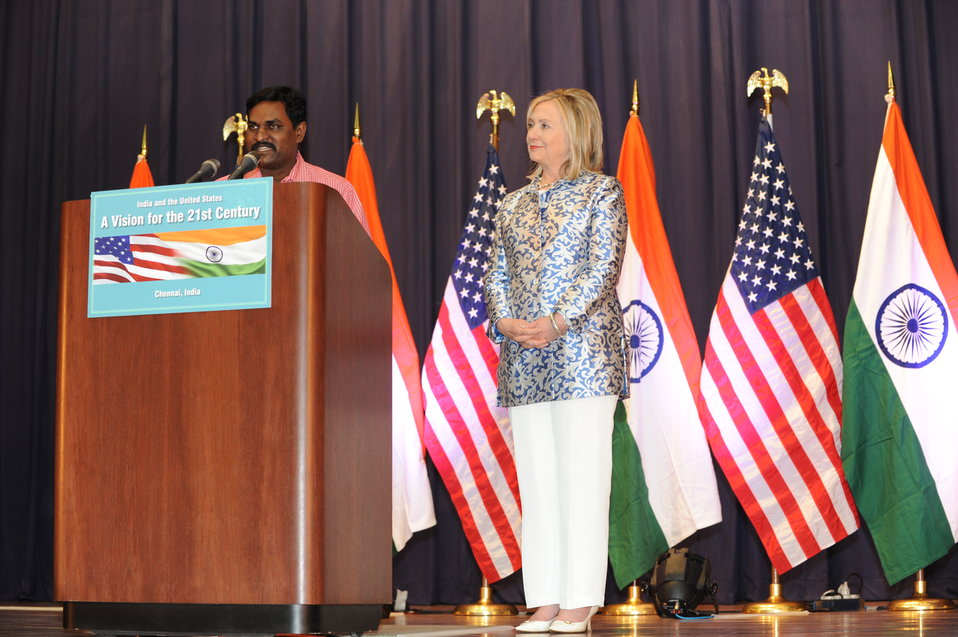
Chief Librarian Naresh Introduces Secretary Clinton

Anna Centenary Library Chief Librarian Naresh introduces U.S. Secretary of State Hillary Rodham Clinton at Anna Centenary Library in Chennai, India, on July 20, 2011. [Paul Cohn/ State Department photo]